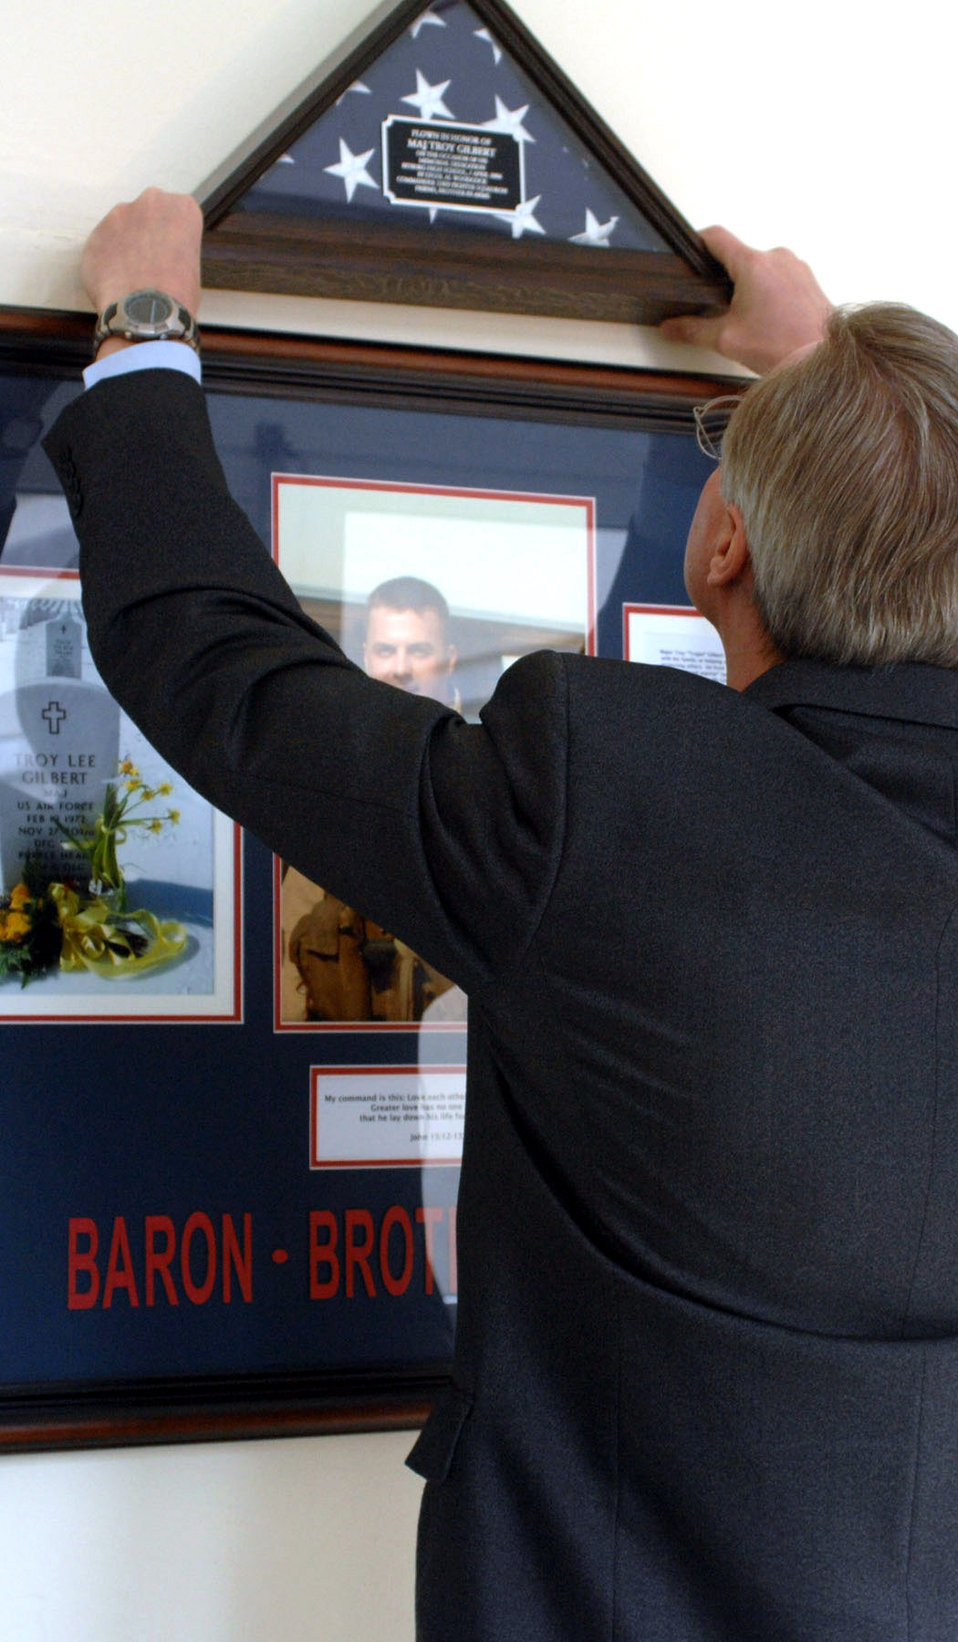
School honors fallen Airman, former student

David Carlisle hangs a flag above a commemorative plaque hung in the memory of Maj. Troy Gilbert April 5 at Bitburg High School near Spangdhalem Air Base, Germany. Major Gilbert was a BHS graduate. He was supporting Operation Iraqi Freedom when he lost his life when his F-16 Fighting Falcon crashed Nov. 27, 2006, 20 miles northwest of Baghdad. Major Gilbert was on a mission providing combat support to both an Army helicopter crew that had crashed and ground forces trying to reach the crash site in the Anbar Province, 20 miles northwest of Baghdad. Mr. Carlisle is the Bitburg High School principal.